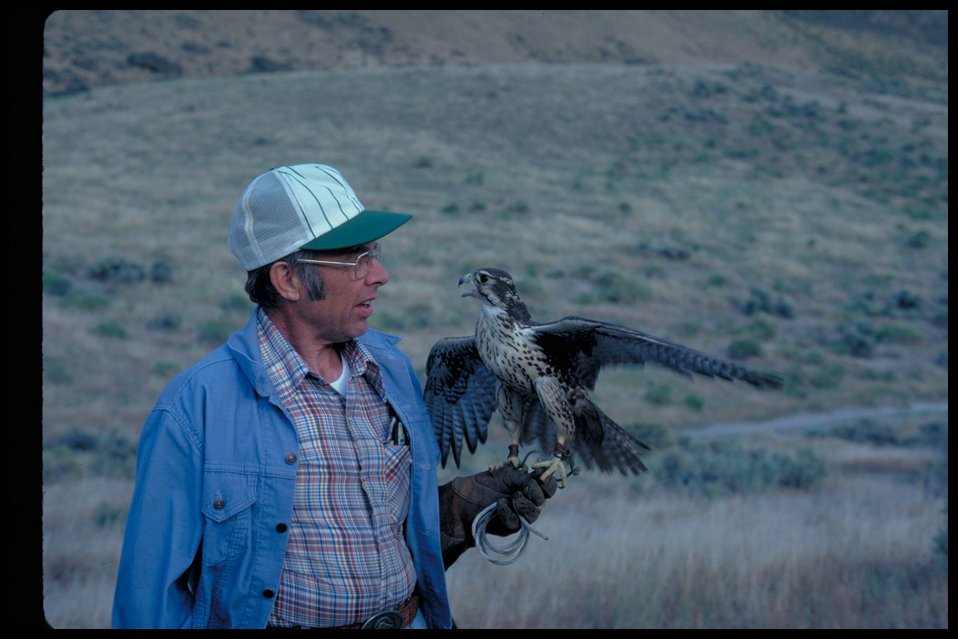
Birds of Prey National Conservation Area BOP Owyhee Field Office LSRD Lower Snake River District